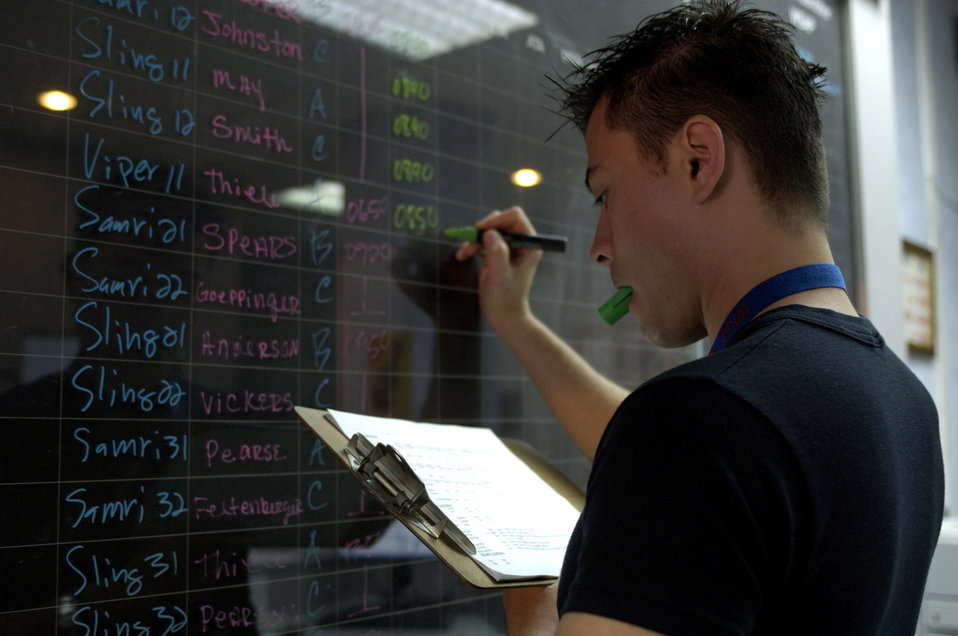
Commando Sling

PAYA LEBAR AIR BASE, Singapore -- Senior Airman Charles Cains writes up the daily flight schedule here Nov. 9 during Exercise Commando Sling. The annual exercise began in 1990 to provide valuable combined air combat training for U.S. and Singapore Air Force fighter units. The exercise allows units to sharpen air combat skills, improve procedures for sustained operations at a non-U.S. base, and promote closer relations between the two air forces and nations. Airman Cains is from the 14th Figher Squadron at Misawa Air Base, Japan.